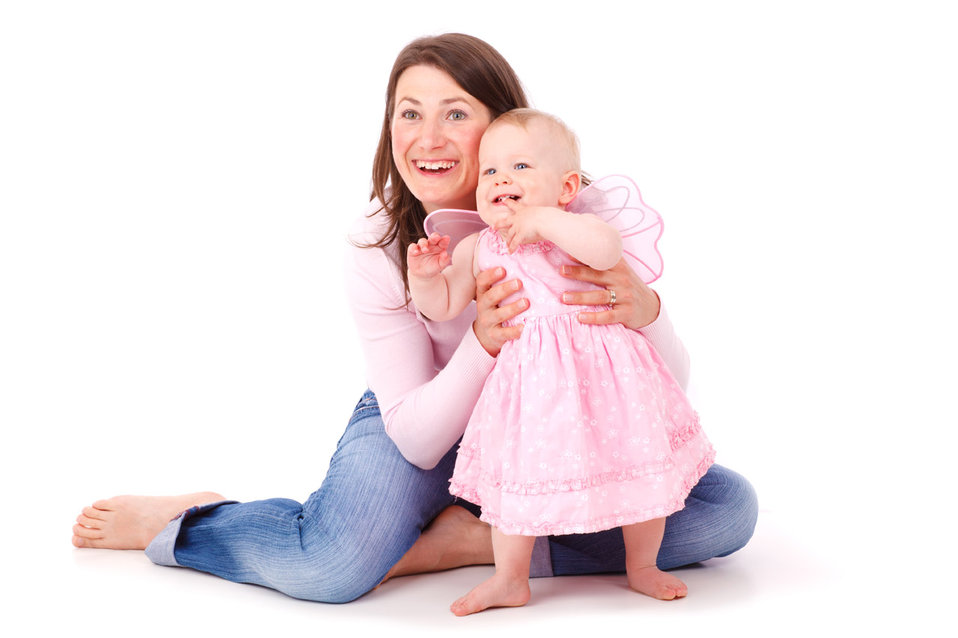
Mother and baby isolated

Mother and baby girl looking at something isolated on white background.